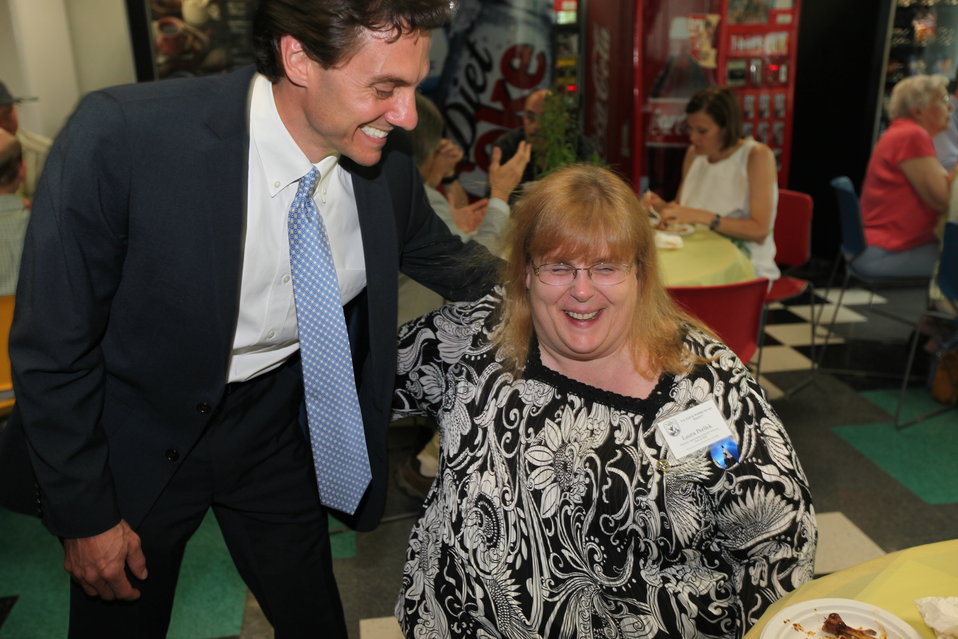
Northeast Region Employee Appreciation Awards

Luncheon - Paul Phifer and Laura Perlick